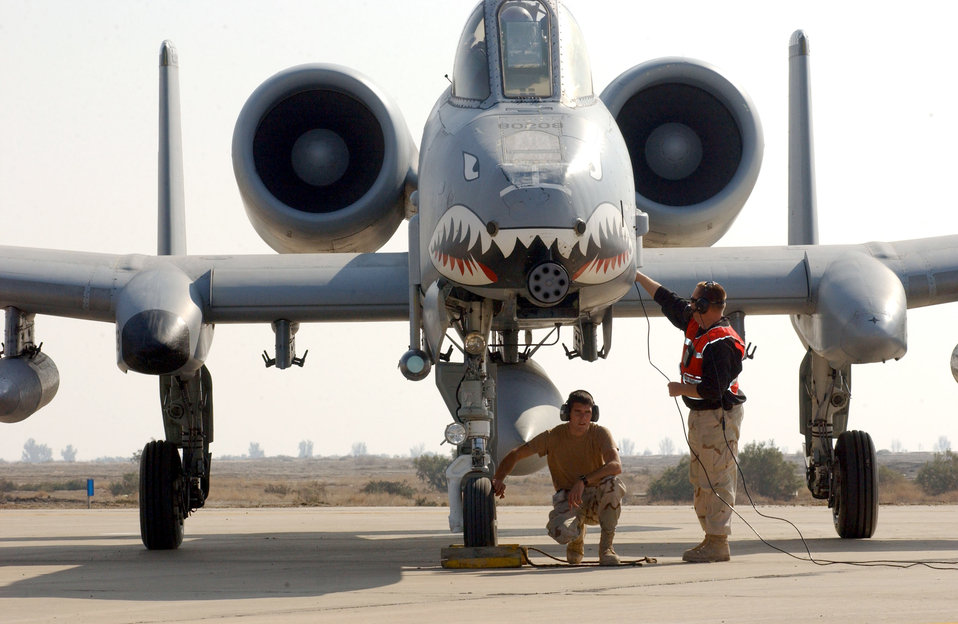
Iraqi Freedom

TALLIL AIR BASE, Iraq -- Crew chiefs make the final pre-flight preparations on an A-10 Thunderbolt II here Dec. 4. The crew chiefs are with the 23rd Expeditionary Aircraft Maintenance Squadron.